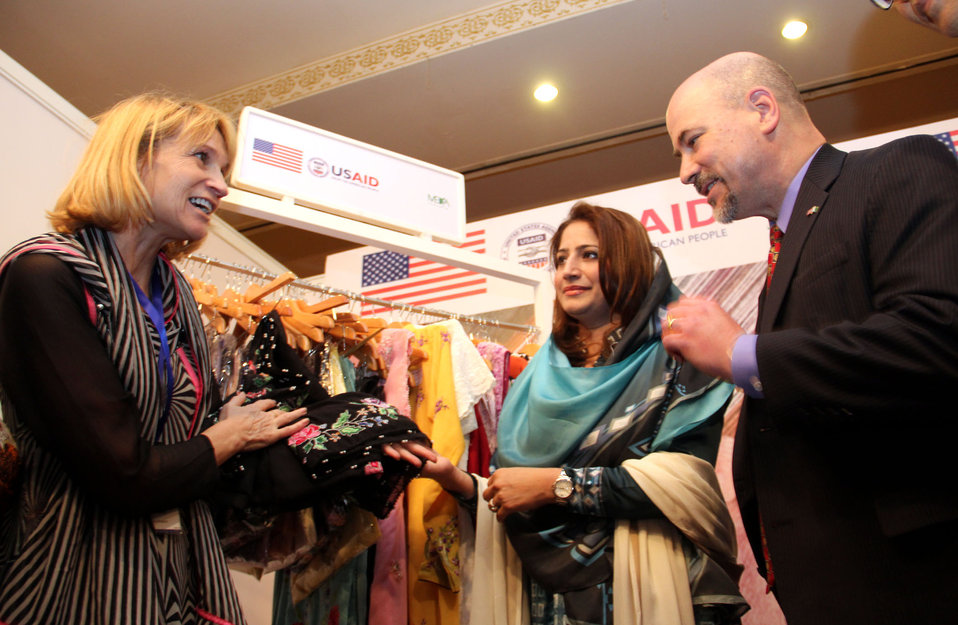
USAID’s Entrepreneurs Project

Ms. Rubina Sadaat Qaimkhani, Minister for Women Development and USAID Deputy Mission Director, Sindh appreciating the work done by rural women hand embellishers at Industry Conference organized by USAID’s Entrepreneurs Project